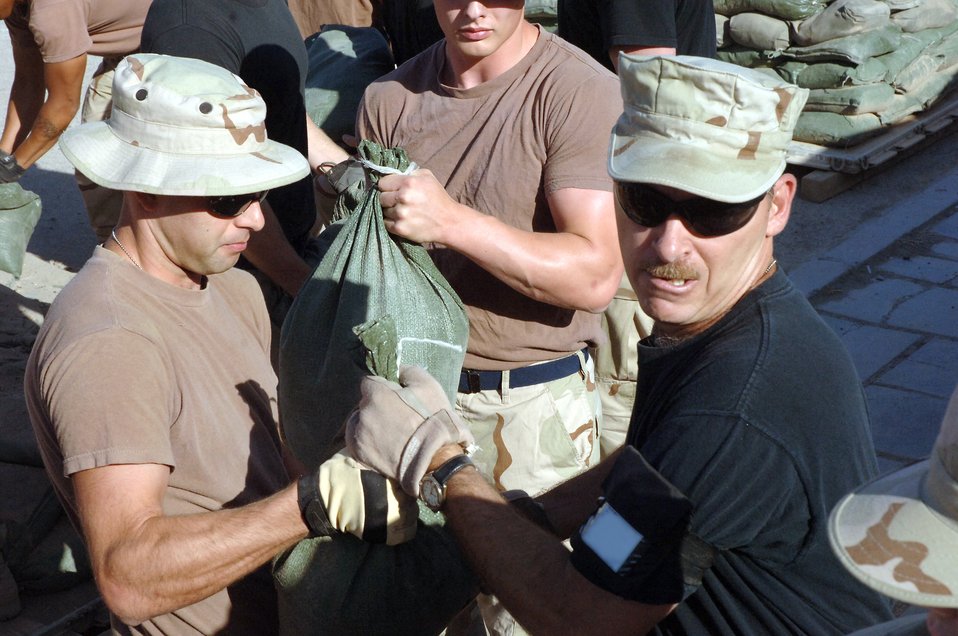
Fightin' the desert heat

Tech. Sgt. Tonay Bonanno (left) passes a sandbag to Master Sgt. Stephen Runyan as Airmen from the 447th Air Expeditionary Group perform a